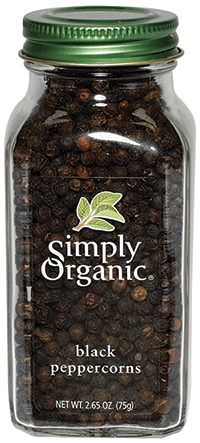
RECALLED – Organic Black Peppercorns

April 4, 2014 – Product Recall – Sprouts Farmers Market Recalls Organic Black Peppercorns Due to Possible Health Risk.